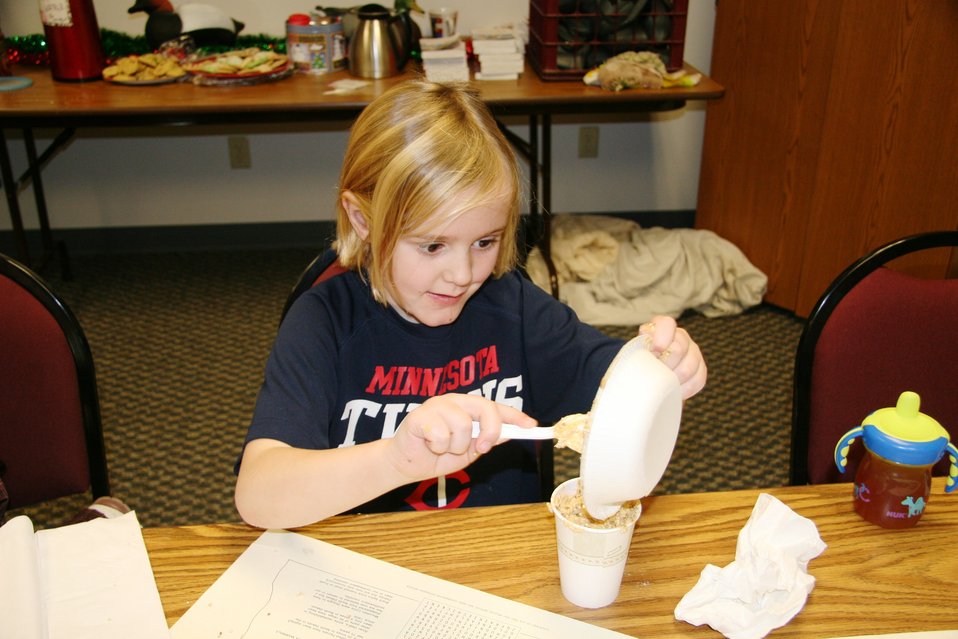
Making Bird Suet Treats

Once all the yummies were mixed together, ingredients were transferred to a paper cup where they could solidify and harden before hanging.